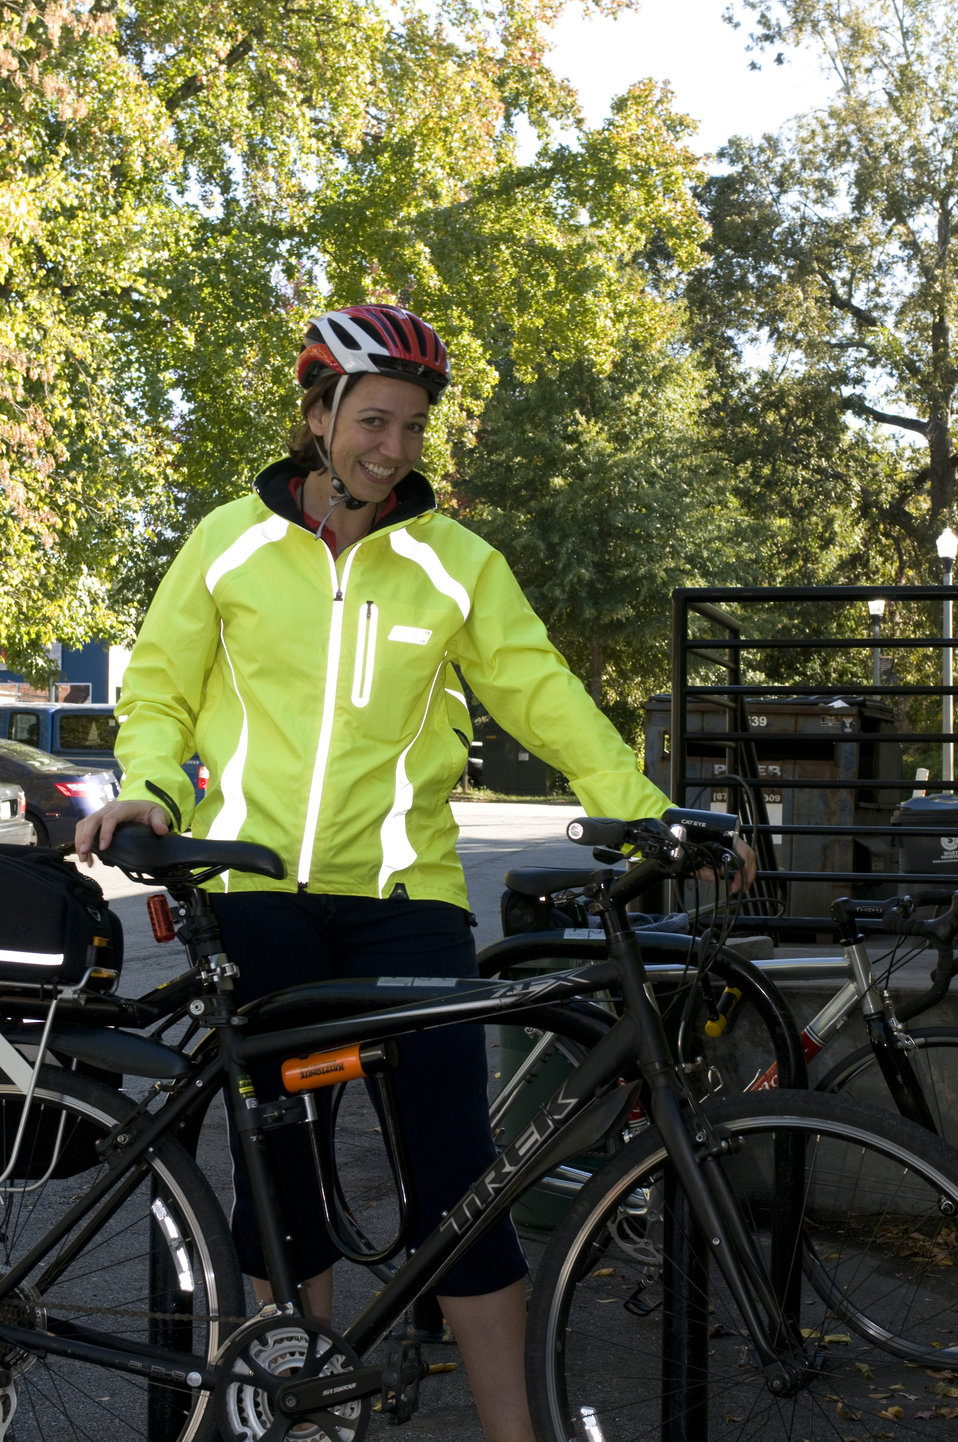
This photograph depicts a smiling female bicyclist, who was about to embark on a bicycle ride. Note the brightly-colored windbreaker she was wearing, which would help drivers see her more easily, as well as the protective, aerodynamic helmet, and the snug leggings, all adding to an overall safer bike ride.